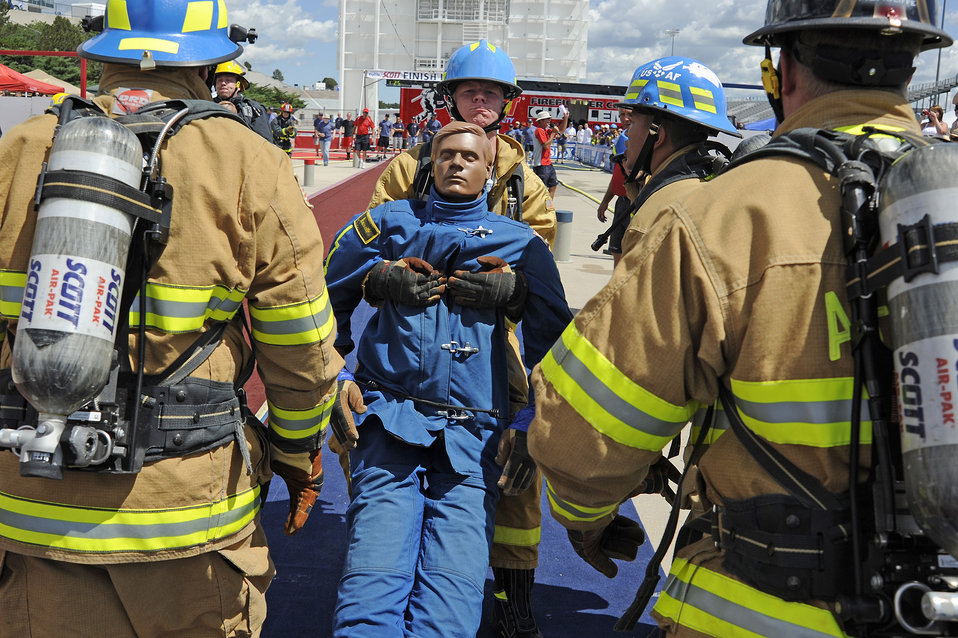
Firefighters Combat Challenge

Air Force Academy firerighter Airman 1st Class Mathew Murrell drags the 175 pound life-size